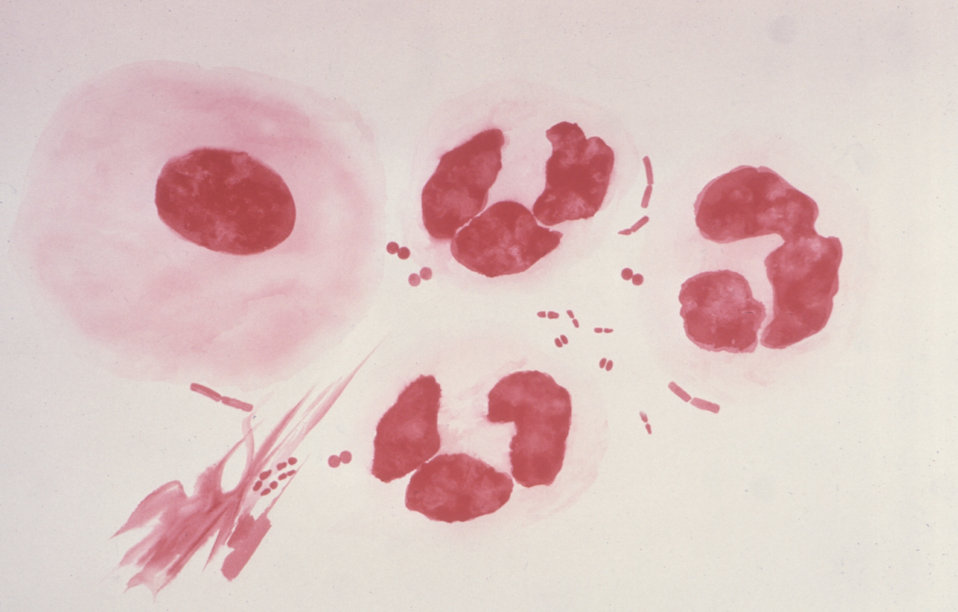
This urethral exudate contains extracellular pleomorphic gram-negative organisms, and rare organisms suggesting gonococci.